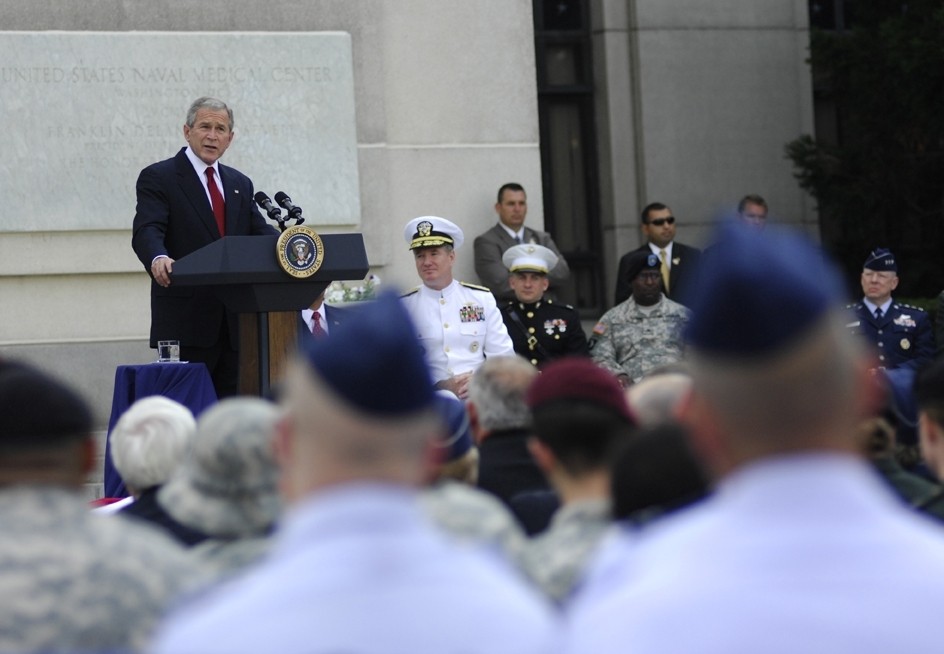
Presidential groundbreaking

President George W. Bush addresses the crowd at the Walter Reed National Military Medical Center groundbreaking ceremony at Bethesda Naval Hospital in Maryland, July 3.